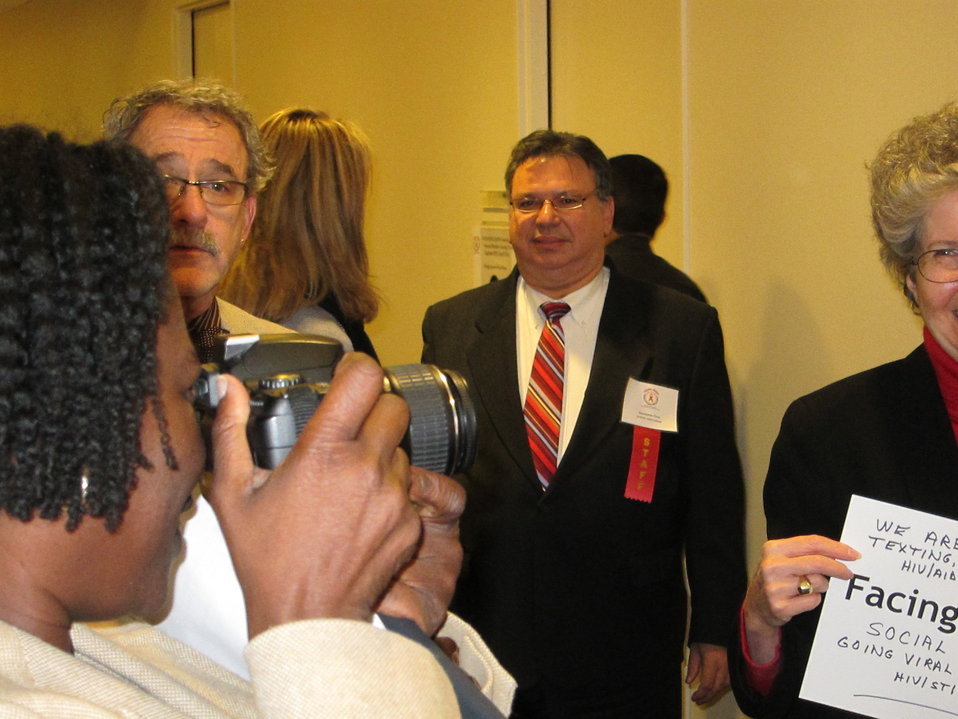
Humberto Cruz